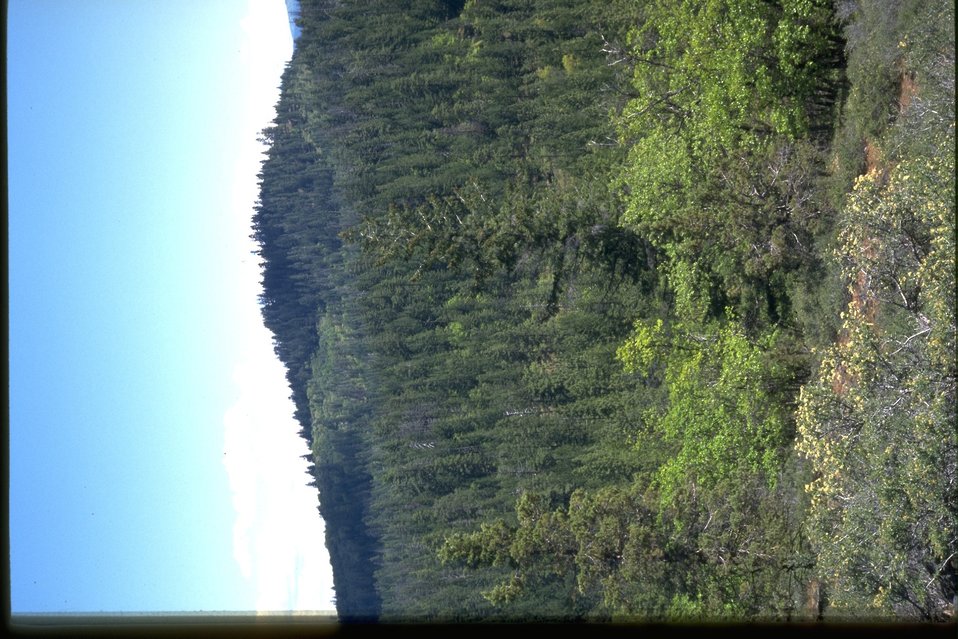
Jenny Creek LSR, the north slope of the Chinquapin Mountain.